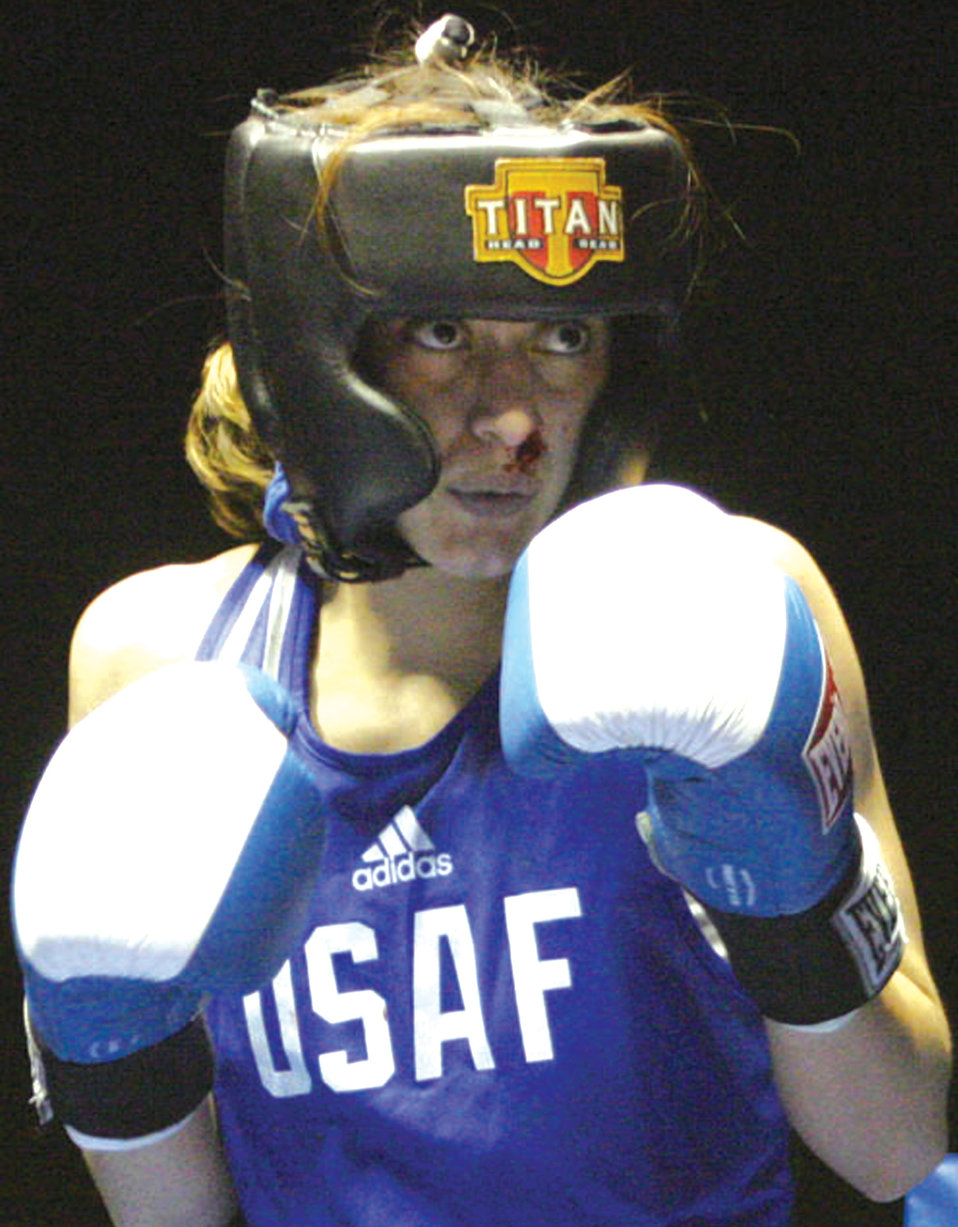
Female Airman tosses hat in boxing ring

FORT HUACHUCA, Ariz. -- Senior Airman Celsa Reyes zeroes in on her opponent at the 2005 Armed Force Boxing Championships here recently. She is assigned to the 90th Security Forces Squadron at F.E. Warren Air Force Base, Wyo.